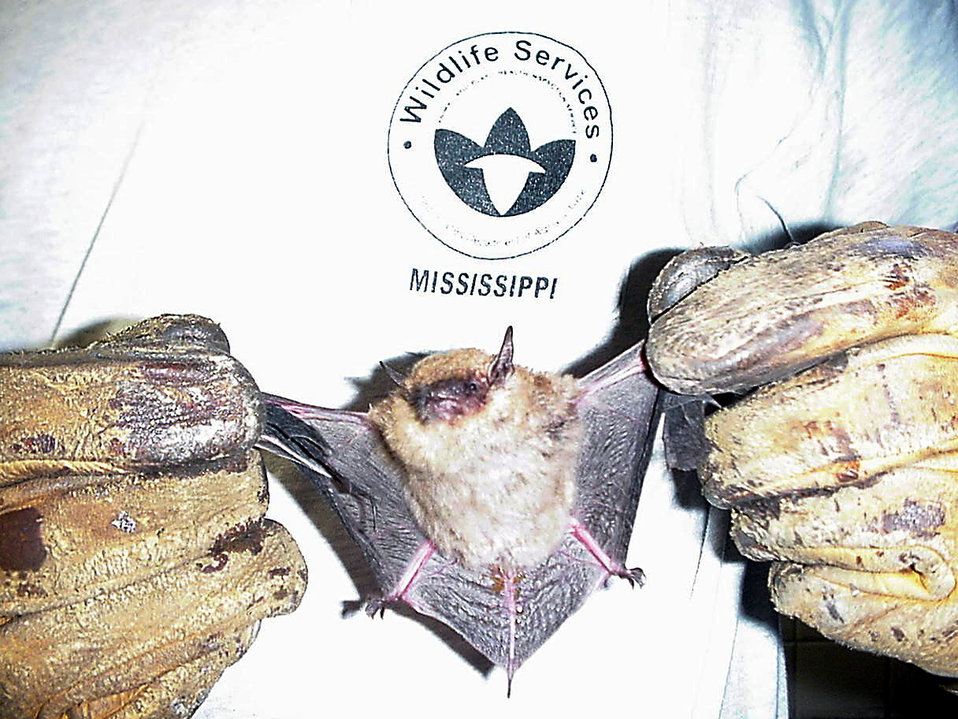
Columbus goes 'batty'

COLUMBUS AIR FORCE BASE, Miss. -- The bat boxes being distributed around the base will deter local bats from finding shelter in work places and houses as well as serve as a countermeasure for mosquitoes. A single bat can eat up to 1,000 mosquitoes in one hour.